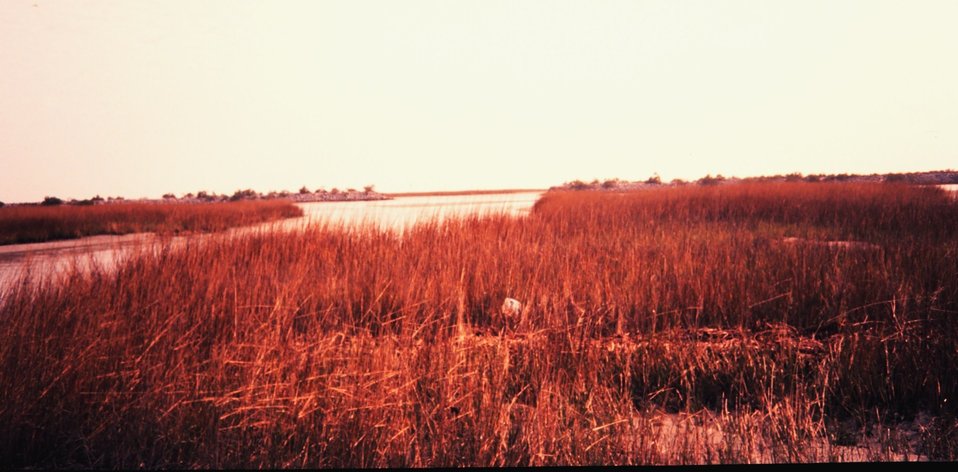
Natural marsh area adjacent to land created as part of settlement an oil spill.